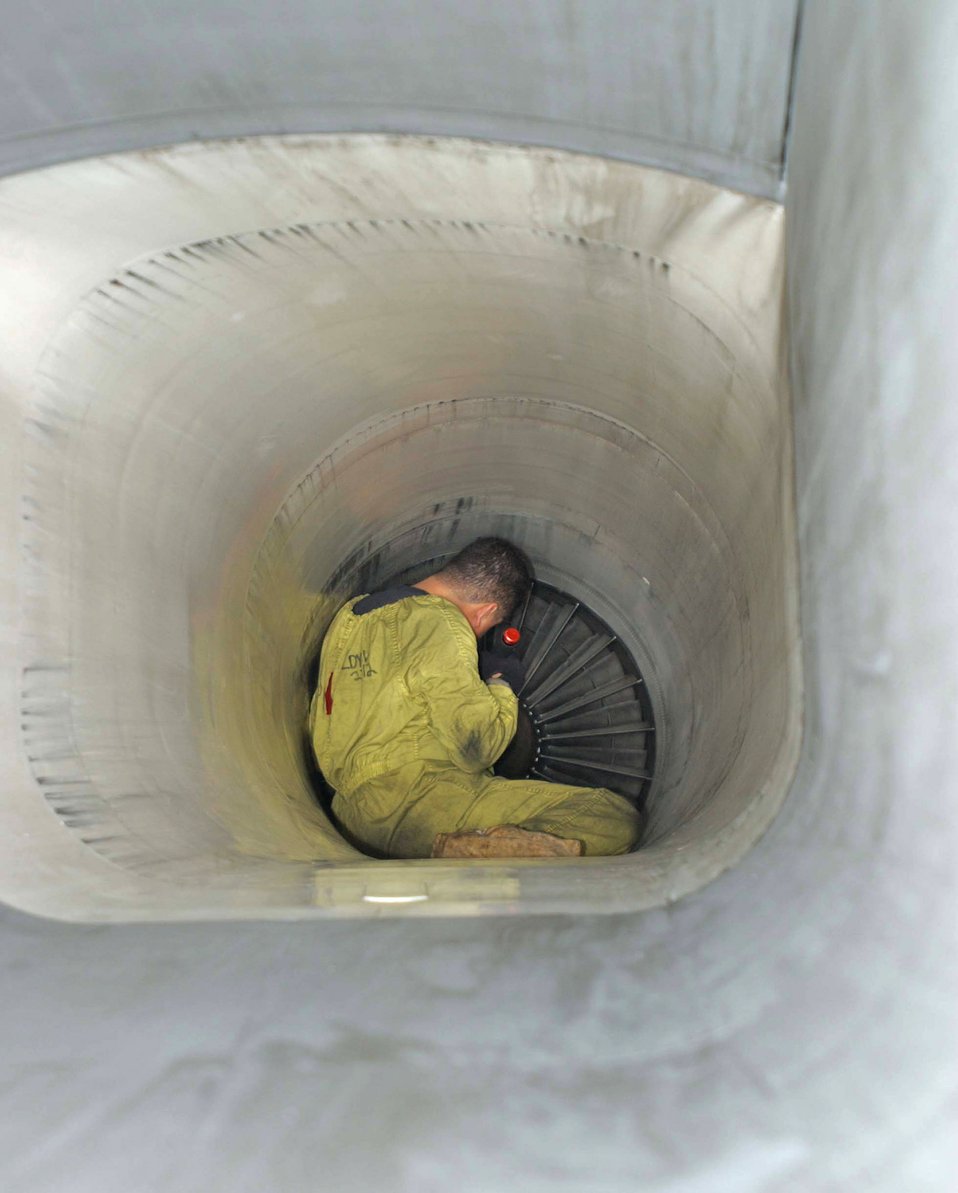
Northern Viking tests command, control capabilities

Staff Sgt. Roger Braun inspects an engine intake for damage as part of a through flight inspection Aug. 13 at Keflavik Airport, Iceland. Three F-15 Eagles and two KC-135 Stratotankers are participating from Royal Air Force Lakenheath and RAF Mildenhall, both from England. Sergeant Braun is assigned to the 493rd Fighter Squadron from RAF Lakenheath.